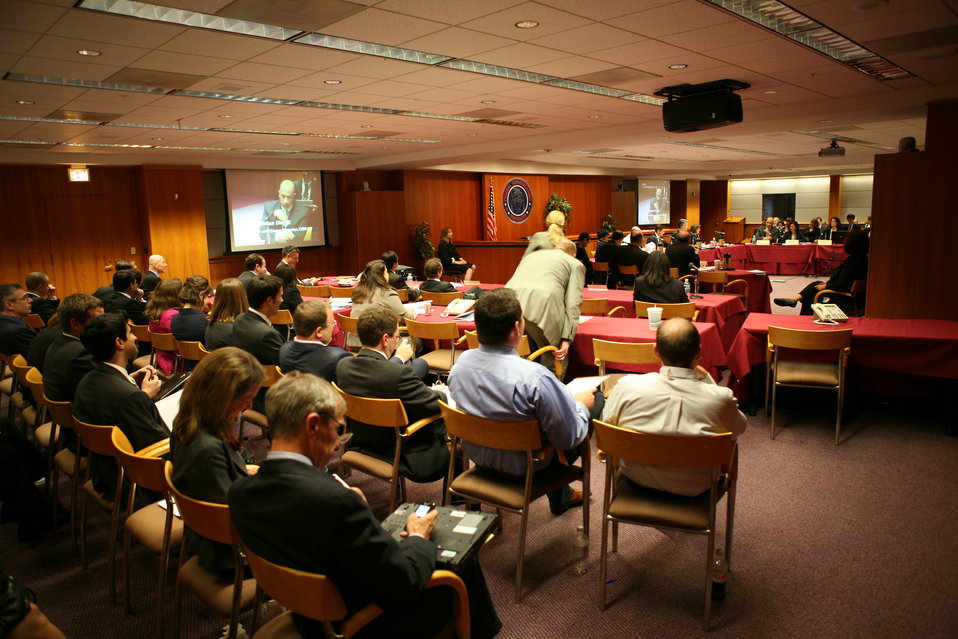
Broadband Midterm Review 9-29-09